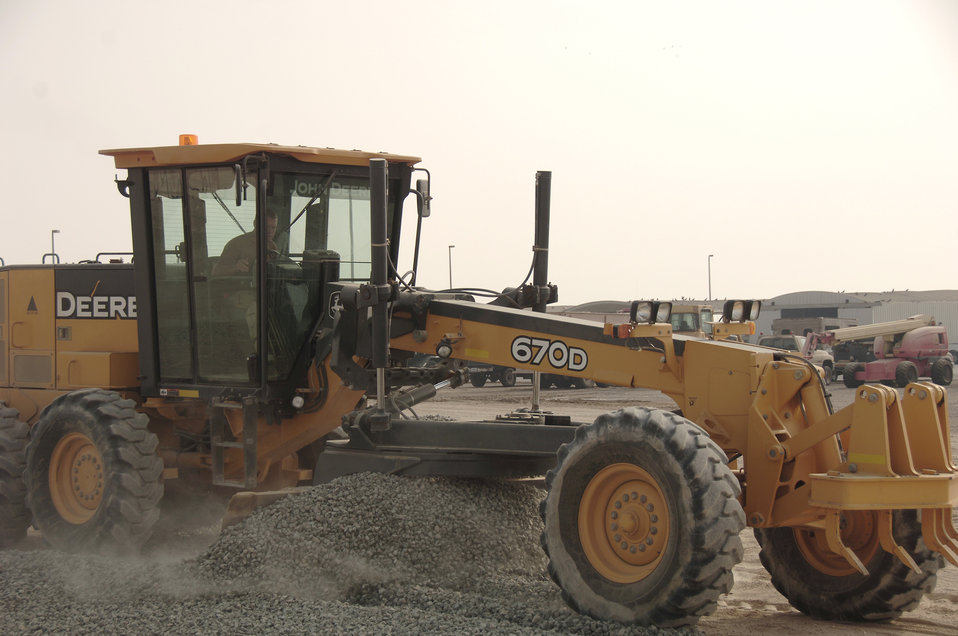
Airmen prep for Patriot's debut at Southwest Asian base

Staff Sgt. Shane Newell uses a motor grader to spread fill material to build up and stabilize the sub-base prior to placing base course gravel Sept. 16 at an air base in Southwest Asia. Airmen are preparing an area for Soldiers from the 5-52 Air Defense Artillery Battalion of Fort Bliss, Texas. Sergeant Newell is assigned to the the 380th Expeditionary Civil Engineer Squadron and deployed from Ramstein Air Base, Germany. His hometown is Orlando, Fla.